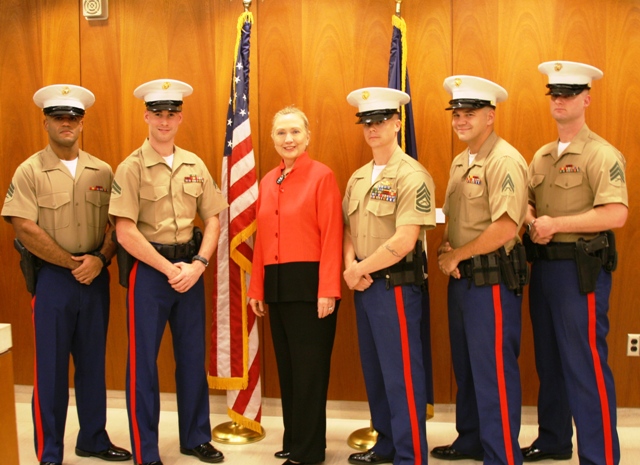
Secretary Clinton Meets With U.S. Marine Corps Guards

U.S. Secretary of State Hillary Rodham Clinton meets with U.S. Marine Corps Guards of U.S. Embassy Lome in Lome, Togo, on January 17, 2012.